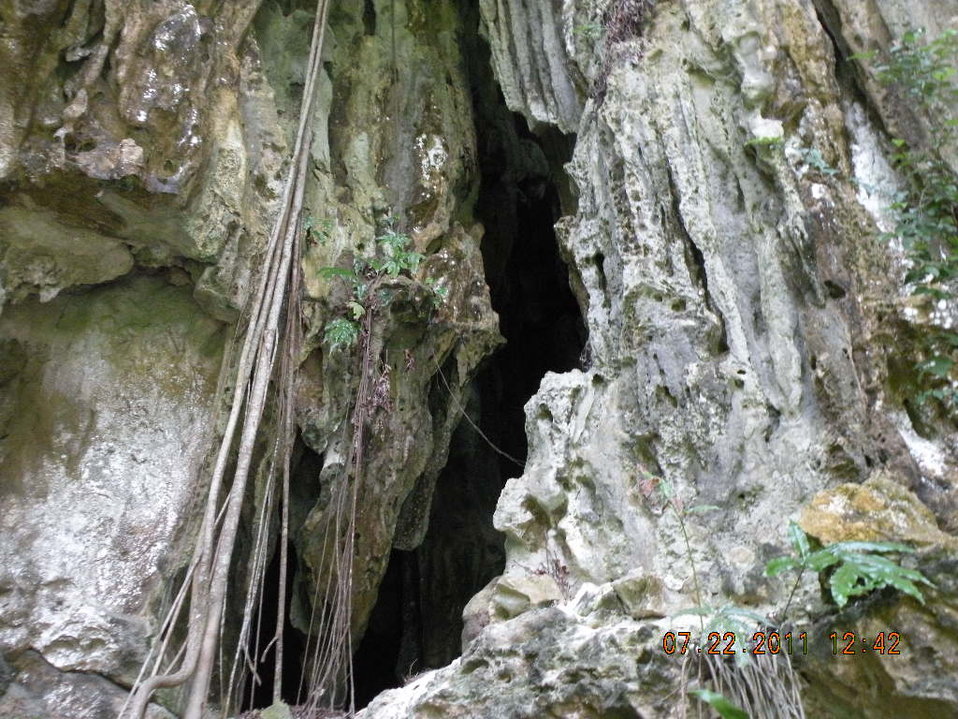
Camp Shutterbug 2011 prize winner

Guam National Wildlife Refuge, Pacific Islands
Photo: Carmelo Nauta, age 8
First place, Culture
Grotto Cave near the refuge Nature Center is the site of a 3,000-year-old Chamorro fishing camp. The tree is a Ficus prolixa, called Trongkun Nunu in Chamorro, and banyan or strangler fig in English. It is considered a sacred tree, believed to be the dwelling place of the ancestral spirits. Its roots are used in traditional healing.